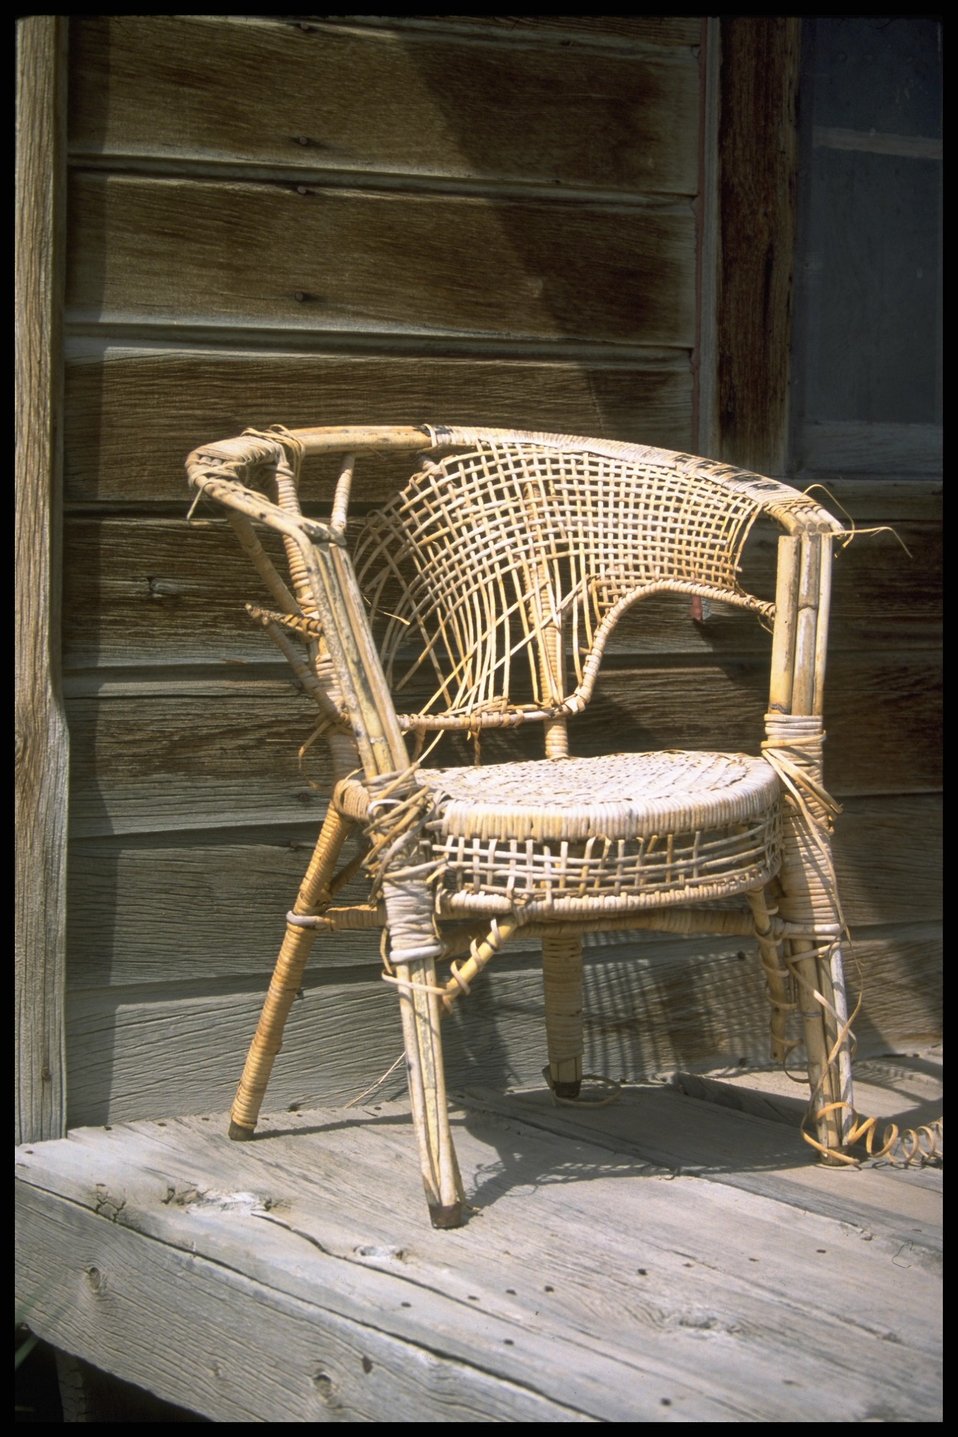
Old wicker chair on porch at the Shirk Ranch, Lakeview District.